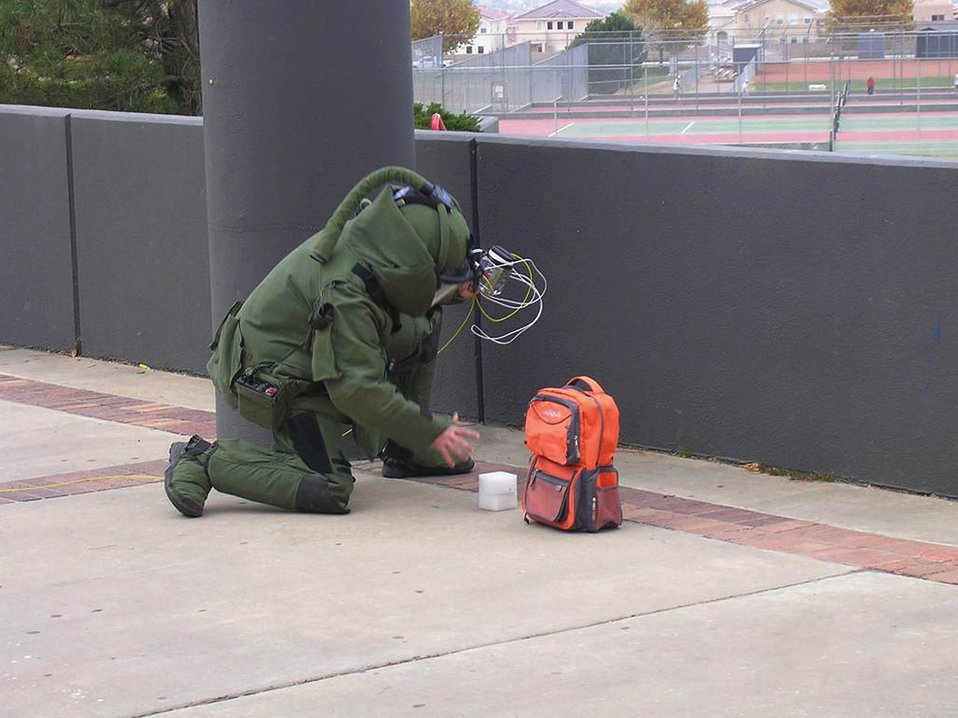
TECHNICIAN PARTICIPATES DURING AN OPERATION AMERICA WORKSHOP EXERCISE HOSTED BY SANDIA NATIONAL LABORATORY.

SIXTY-FIVE PEOPLE FROM 12 STATES, THE US MILITARY, AND CANADIAN POLICE AND ARMED FORCES PARTICIPATED IN A WORKSHOP SPONSORED BY DOE AND THE ALBUQUERQUE POLICE DEPARTMENT BOMB SQUAD. THE WORKSHOP ON ADVANCED BOMB-DISABLEMENT TECHNOLOGY FOR BOMB SQUAD PERSONNEL, IT CONSISTED OF TECHNICAL PRESENTATIONS AND TECHNIQUES WERE FOLLOWED BY LIVE RANGE DEMONSTRATIONS AND PARTICIPATION IN SCENARIO EXERCISES.